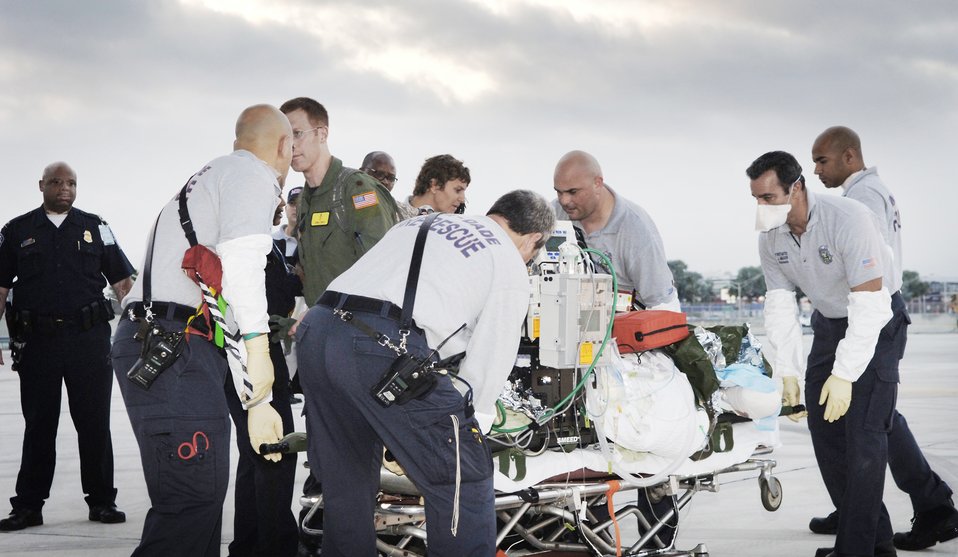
Air Force 'angels' rescue injured Haitians

Emergency medical technicians from Miami-Dade Fire Rescue work with Air Force critical care air transport team members to offload critical-care patients from an Air Force aeromedical evacuation flight to Miami International Airport Jan. 23, 2010. The CCATT accompanied the patients from Haiti, providing critical care while airborne.